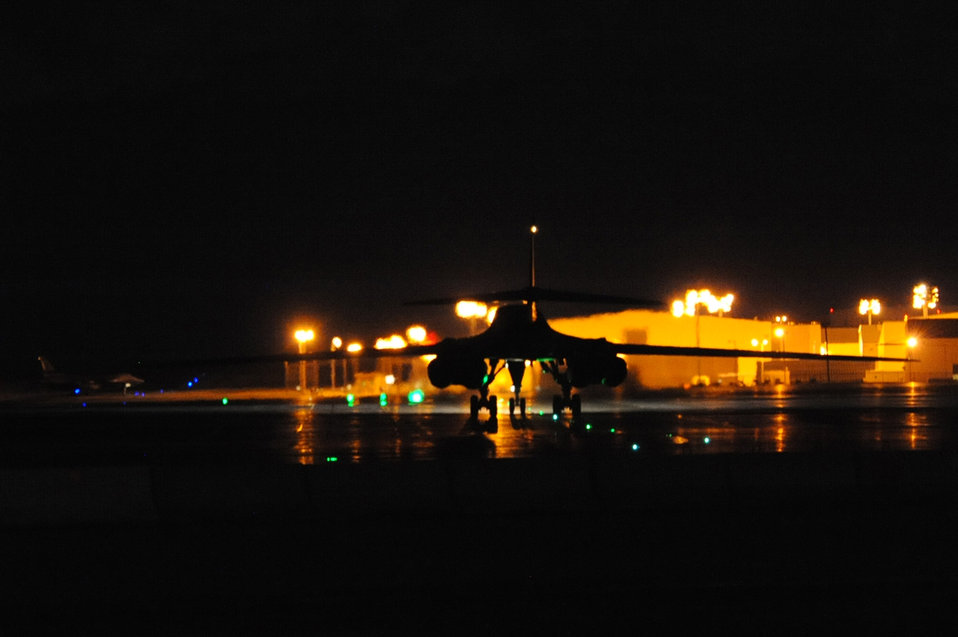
B1-B Lancer braking system

A B-1B Lancer taxis into Ellsworth Air Force Base, S.D., after flying a training mission, Feb. 17, 2011.